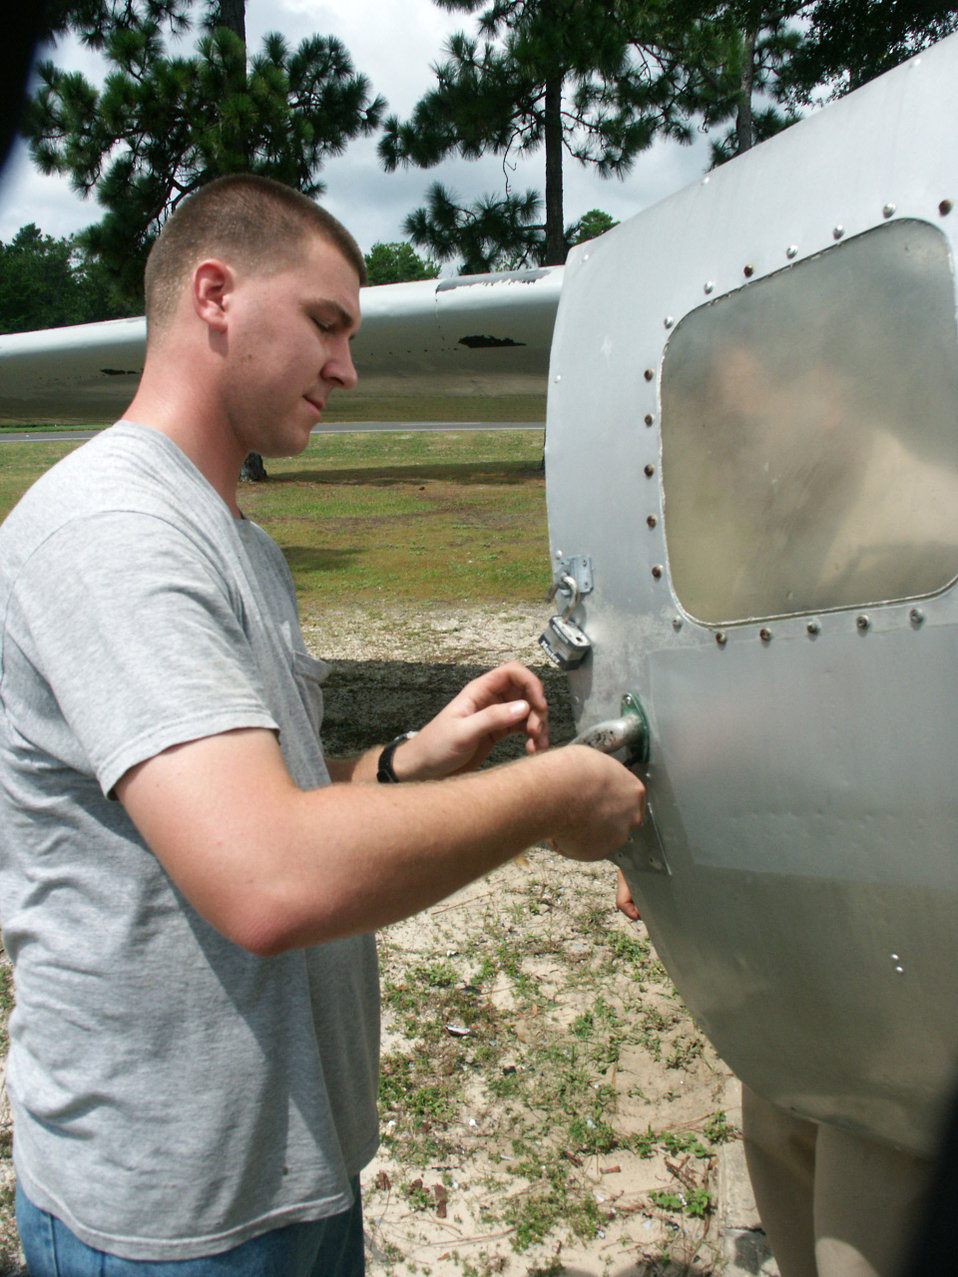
Airman gives static aircraft makeovers

EGLIN AIR FORCE BASE, Fla. -- Senior Airman Rick Miller fixes the door handle on a B-17 Flying Fortress static display at the Air Force Armament Museum here. Airman Miller is an aircraft structural maintenance journeyman with the 33rd Maintenance Squadron who volunteers his time maintaining museum displays.